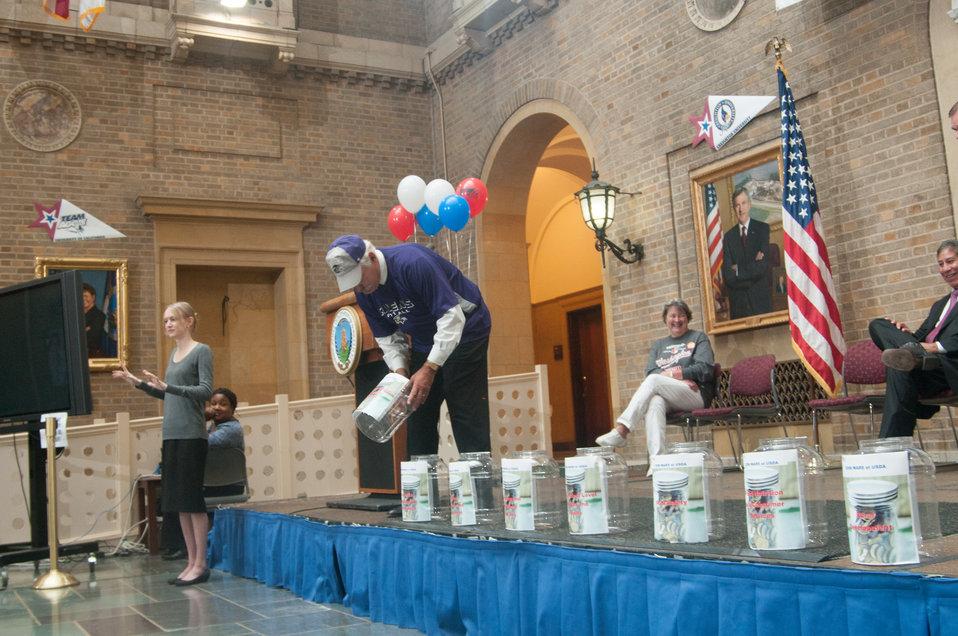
U.S. Department of Agriculture (USDA) Farm and Foreign Agricultural Services Under Secretary and Vice Chair of the USDA CFC Campaign Michael T. Scuse makes opening remarks the 2013 Combined Federal Campaign Opening Ceremony and fund raising event on Tuesday, Sept 17, 2013 in the Whitten Building, U.S. Department of Agriculture (USDA), Washington, D.C. The Combined Federal Campaign (CFC) is the largest and most successful workplace charitable giving drive in the world. CFC is the only authorized charitable organization solicitation of Federal employees in their workplaces. CFC is structured to support and to promote philanthropy through a voluntary program that is cost-efficient and effective in providing all Federal employees the opportunity to impact the CFC charitable interest of their choosing. For more information about CFC, please see www.usda.gov/wps/portal/usda/usdahome?navid=USDA CFC USDA Photo by Lance Cheung.